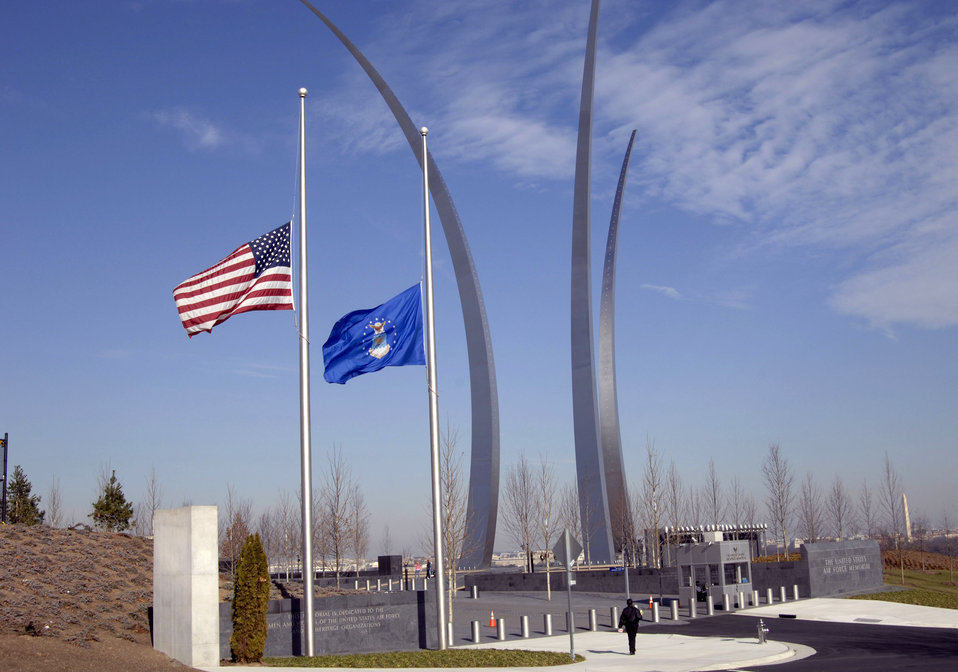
In memory of President Ford

The American flag and the U. S. Air Force flag fly at half staff in front of the Air Force Memorial in Arlington, Va. in honor of President Gerald R. Ford, who passed away Dec. 26 at age 93. During his tenure as president, Ford signed legislation permitting women to enter military academies Oct. 7, 1975. Women first entered the United States Air Force Academy on June 28, 1976. He will be laid to rest Jan. 2 on the grounds of the Gerald R. Ford Presidential Museum in Grand Rapids, Mich., the president's hometown.